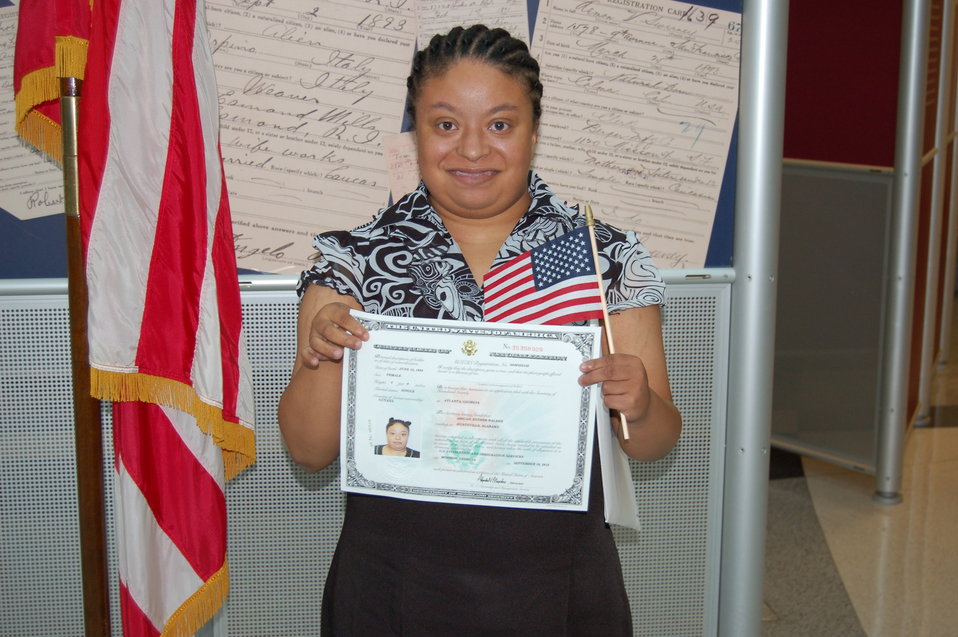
New Citizens